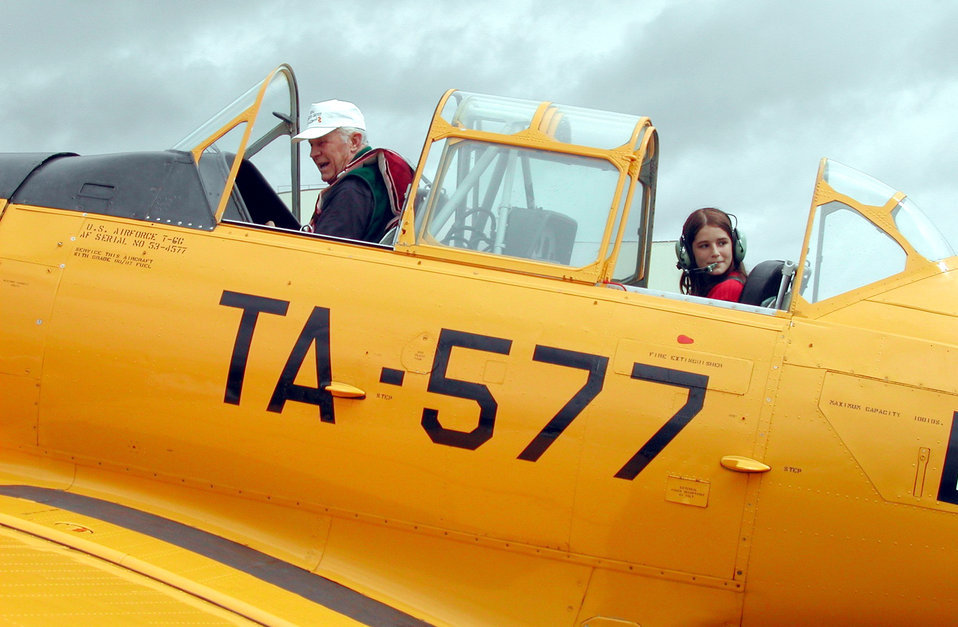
Young eagles

MAXWELL AIR FORCE BASE, Ala. (AFPN) -- Retired Brig. Gen. Chuck Yeager and Young Eagle Danielle Orcutt, 12, taxi down the flightline in a World War II-vintage AT-6 Texan aircraft here June 7.